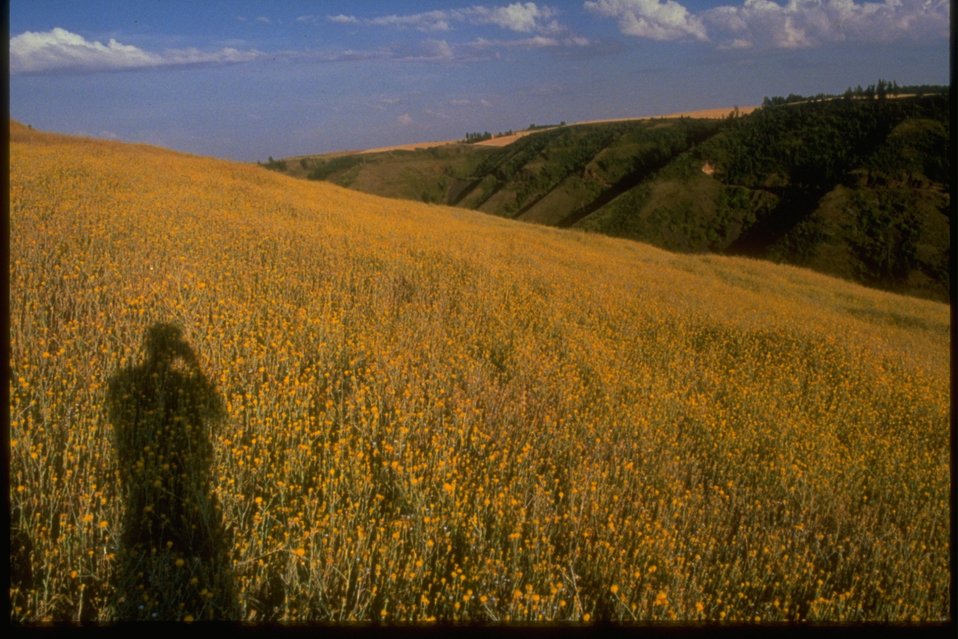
Expanse of Yellow Starthistle near Grangeville, ID.